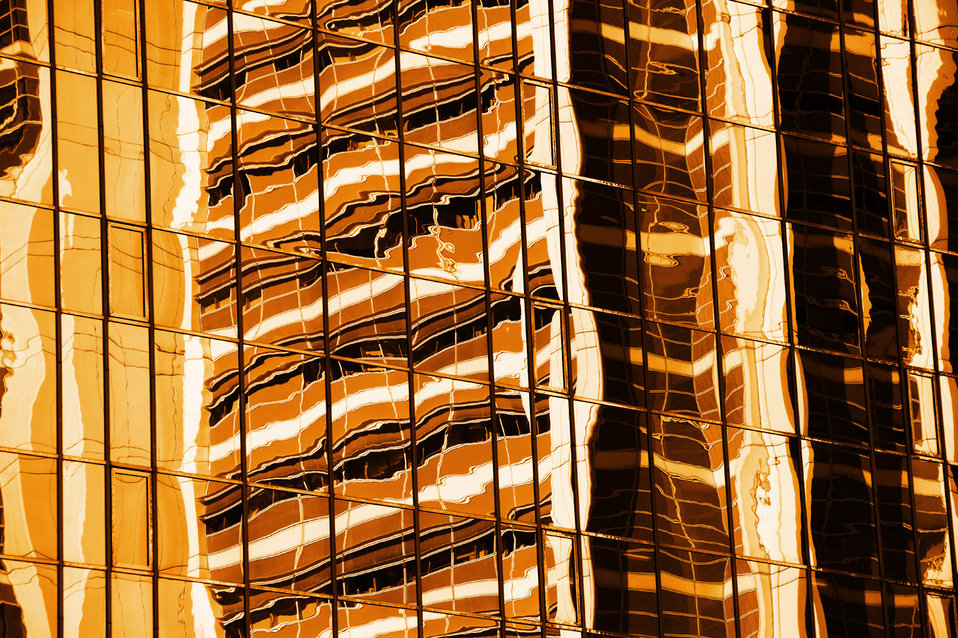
Sunset window reflection

Skyscraper reflecting another office building in its widows at sunset.